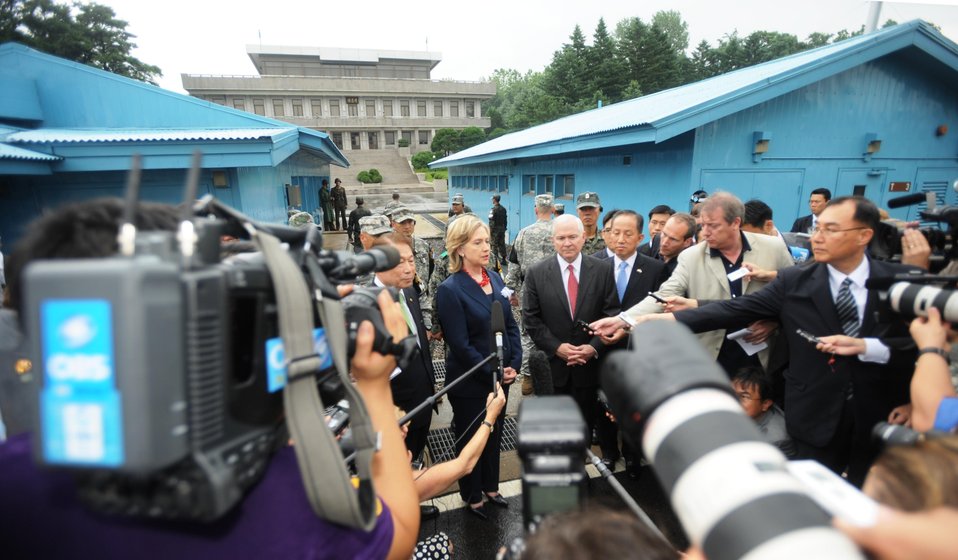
Secretary Clinton and Secretary Gates Brief Reporters

U.S. Secretary of State Hillary Rodham Clinton and U.S. Secretary of Defense Robert M. Gates brief reporters at the Truce Village in Panmunjom, South Korea, on July 21, 2010.